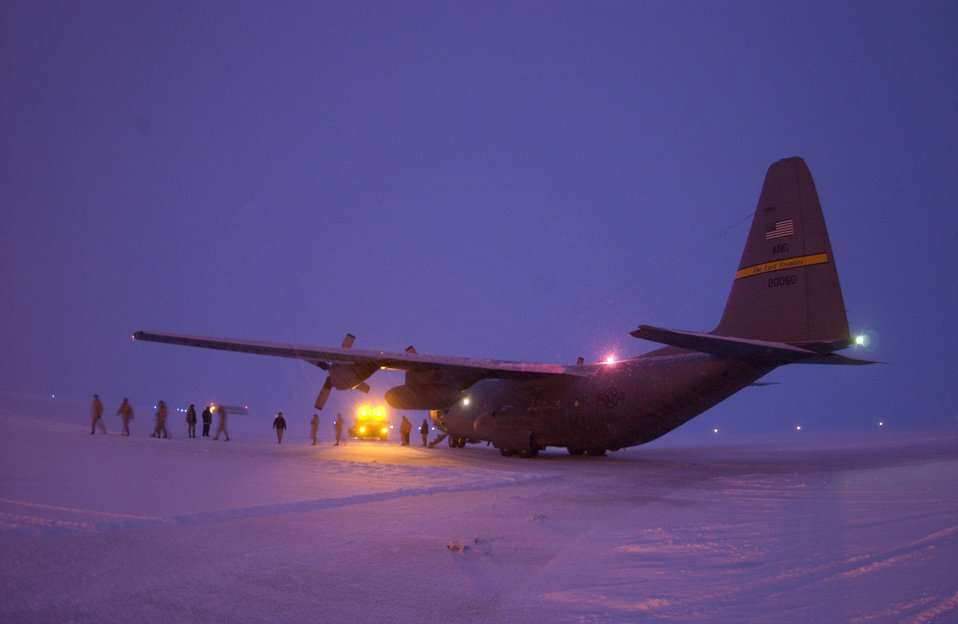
Life at Thule

On their way home from Bagram, Afghanistan, Airmen from the Kulis Air National Guard Base, Alaska, exit their C-130 Hercules during a